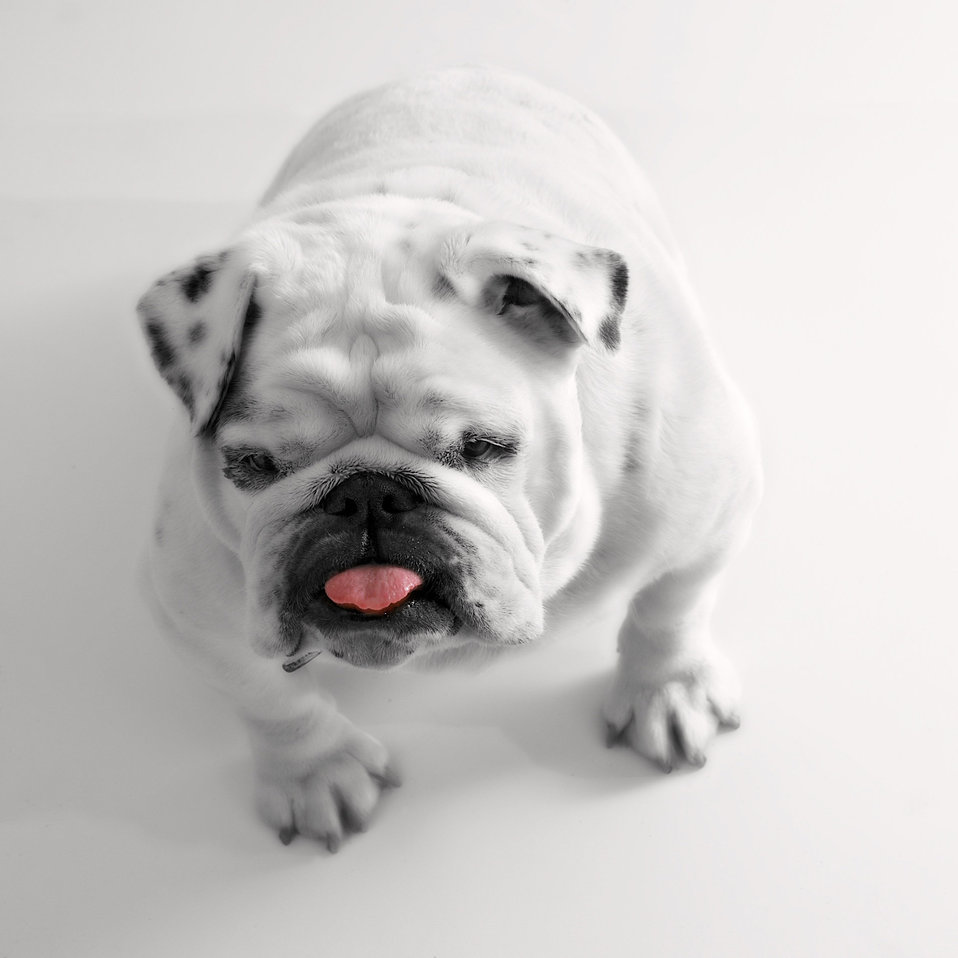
Mia

White bulldog.